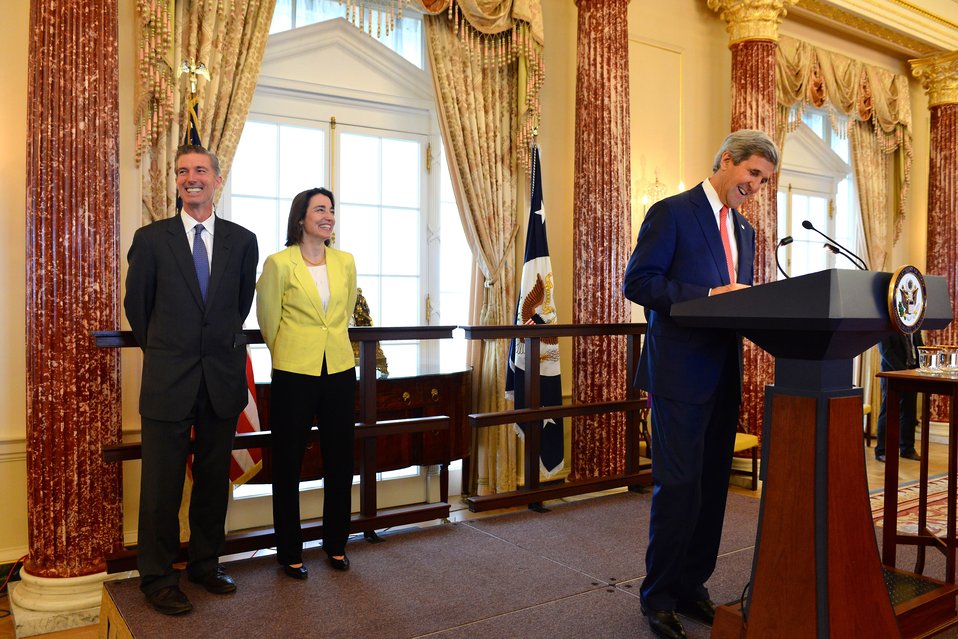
Secretary Kerry Delivers Remarks at the Swearing-in Ceremony for Under Secretary Sewall

U.S. Secretary of State John Kerry delivers remarks at the swearing-in ceremony for Under Secretary for Civilian Security, Democracy, and Human Rights Sarah Sewall, at the U.S. Department of State in Washington, D.C., on April 14, 2014.